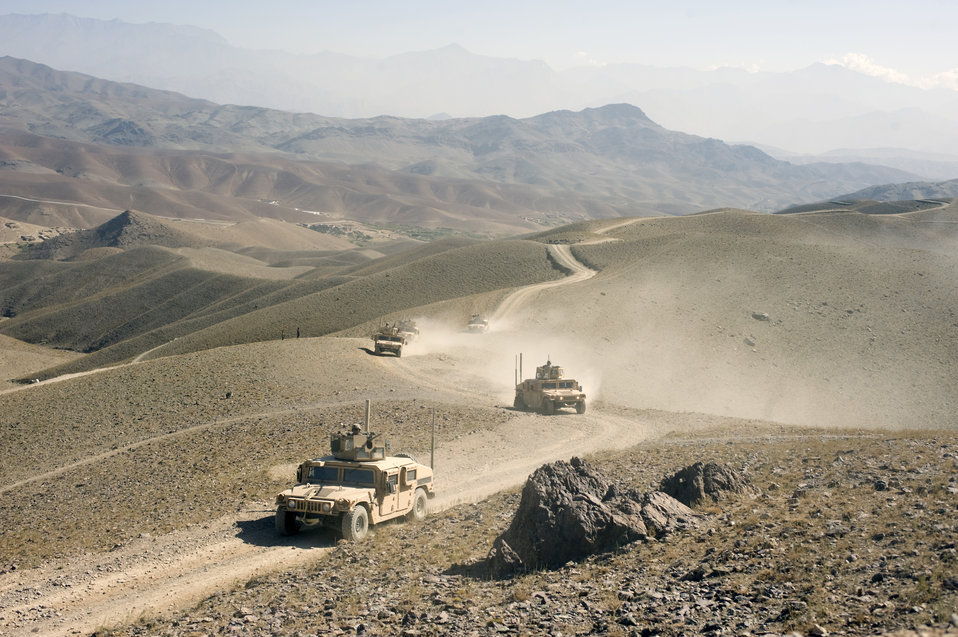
PRT strives to build relationships in remote village

Members of the Kapisa and Parwan Provincial Reconstruction Team traversed rugged hand-forged mountain roads barely wide enough for a Humvee to pass in spots with pin-point 180-degree turns and steep cliff edges to provide medical services in Pacha Hawk, Afganistan.